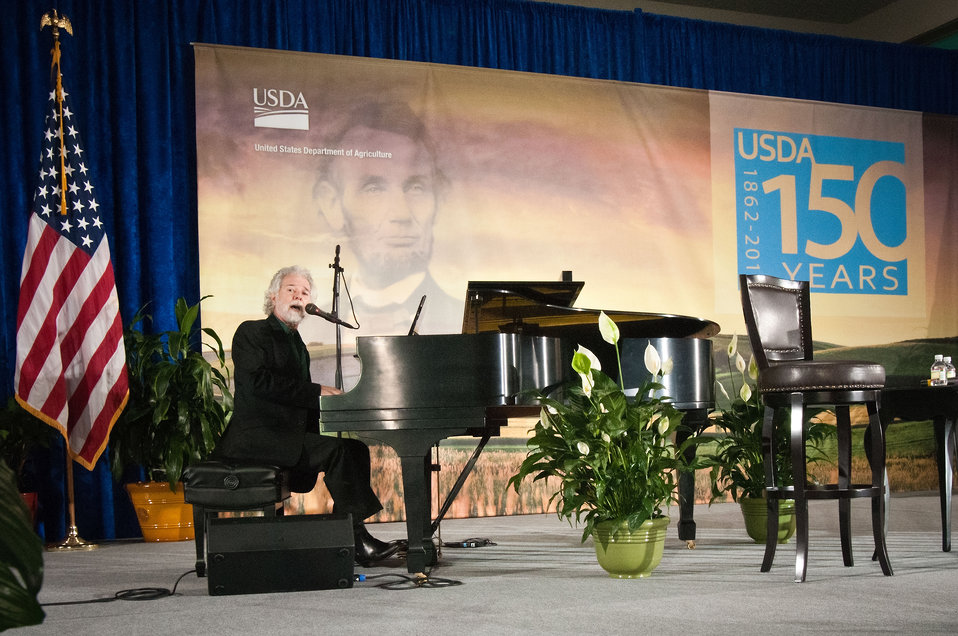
Chuck Leavell Rolling Stones keyboardist, conservationist and Georgia tree farmer played the George Harrison tune, “Here Comes the Sun” at the United States Department of Agriculture's 150th Anniversary celebration in Washington, D.C., on Tuesday, May 15, 2012.